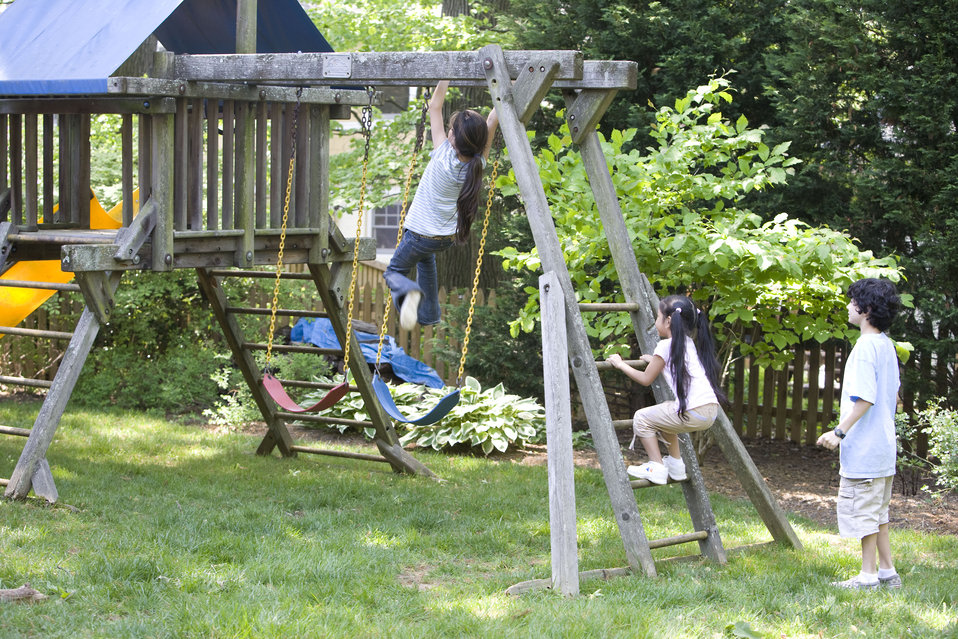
Children love playing outside, and these children were thoroughly enjoying their wooden swing set, and all were having fun in the fresh outdoor air, and the beautiful weather. It's important to note that older wooden playsets may have been treated with arsenic and/or creosote, and therefore, parents need to know if these chemicals were used in their manufacture.